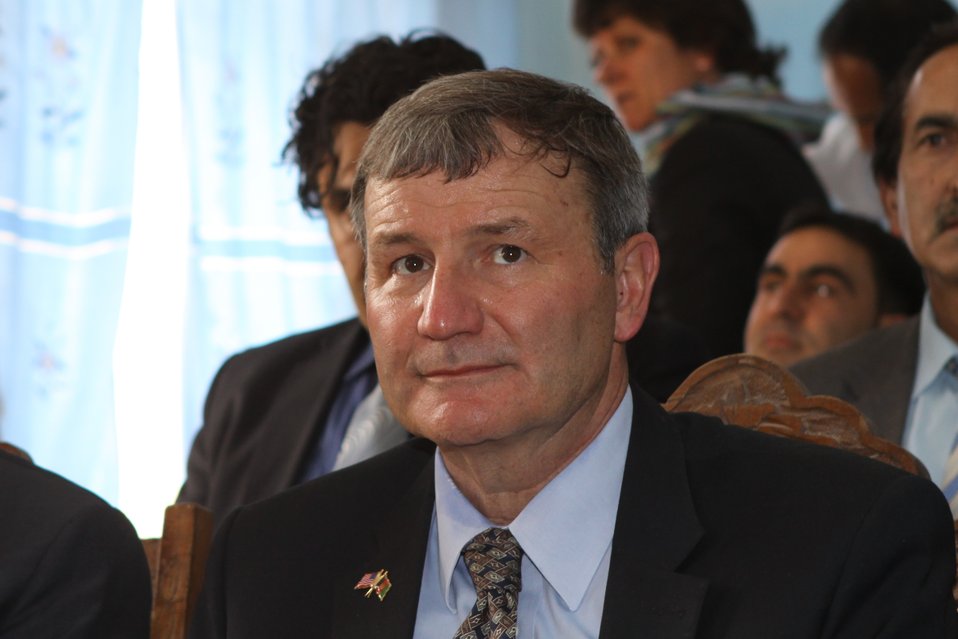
100525 Hirat Textile Company 722